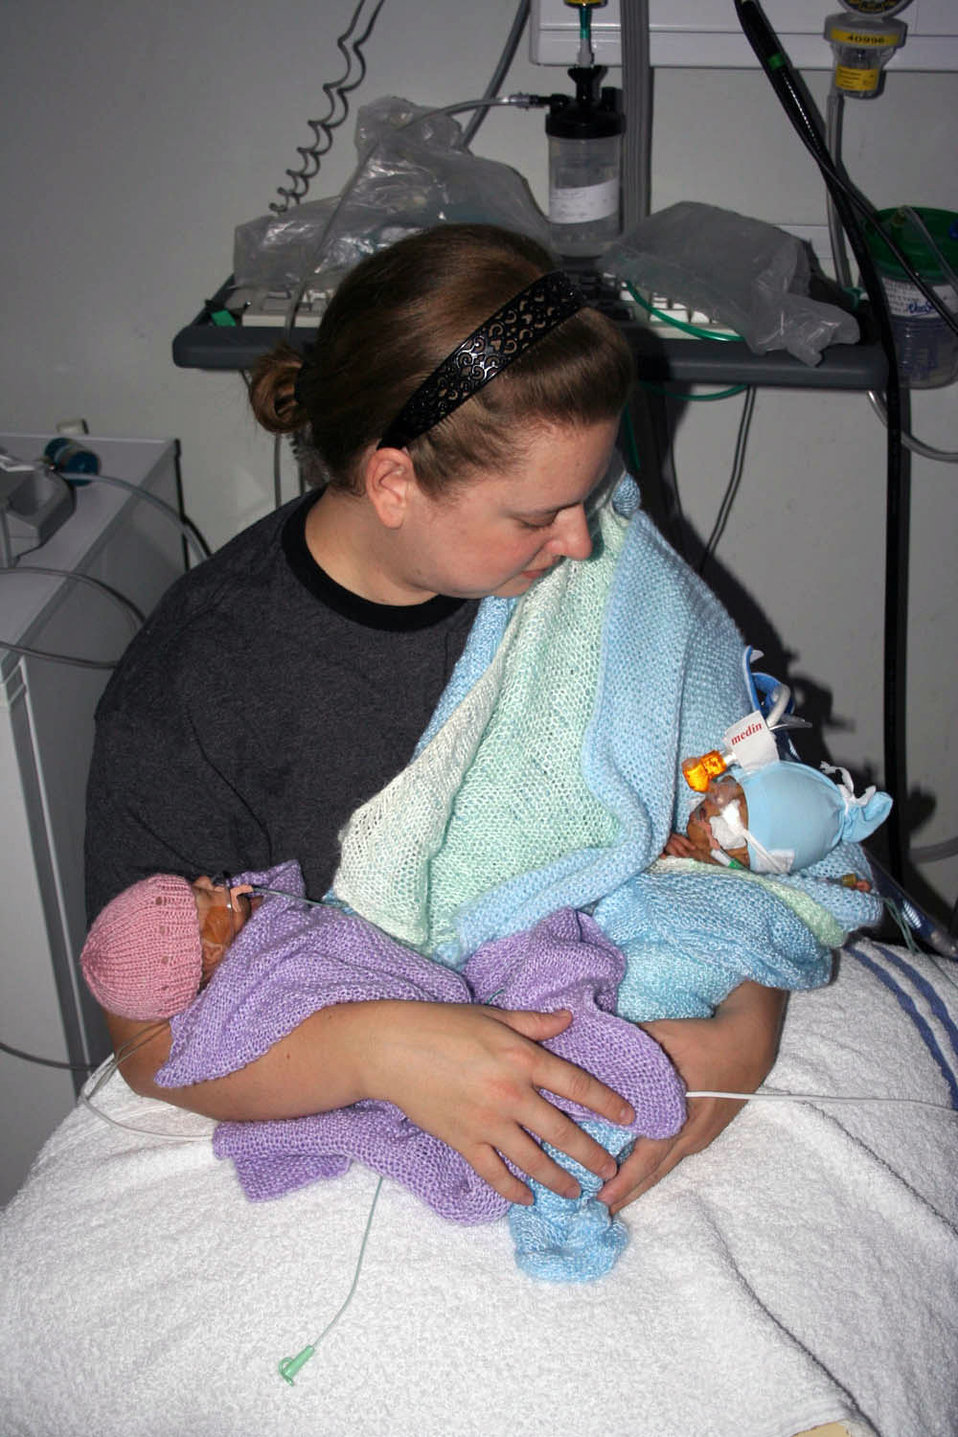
Premature twin's fight for life leaves lasting legacy

Mandy Frazier holds her premature twins at the neonatal intensive care unit in November at Norfolk and Norwich Hospital in England. The twins were born Sept. 6, almost four months prematurely. Her daughter, Alexis Rain, (left) weighed just 1 pound, 3 ounces, and her son, Eric, weighed 1 pound, 5 ounces. Eric died Dec. 10 after suffering serious health problems. Mandy is the wife of Tech. Sgt. Barry Frazier of the 100th Air Refueling Wing legal office at Royal Air Force Base Mildenhall, England.